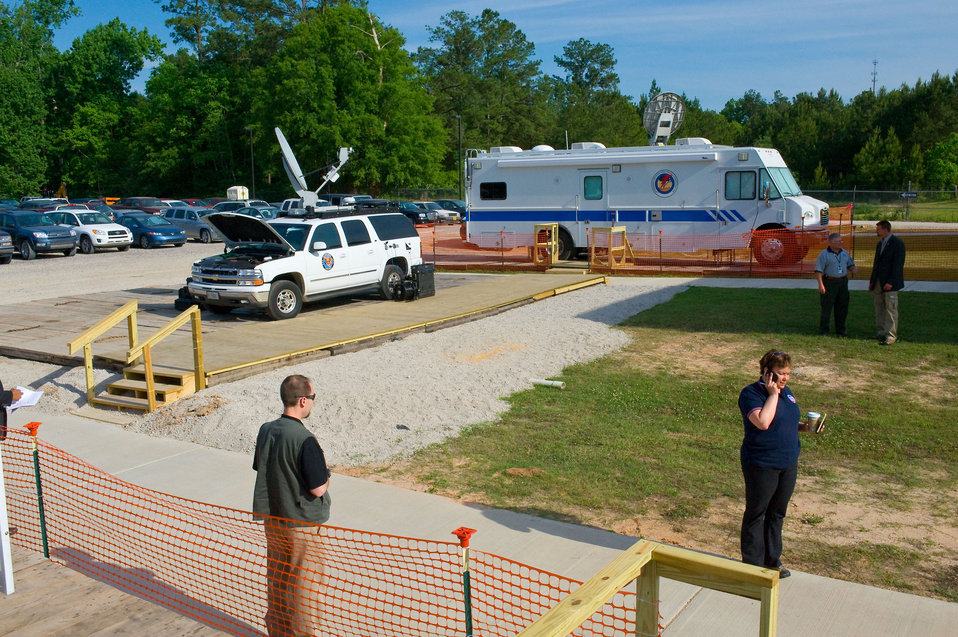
EPA Administrator Meets with Gulf Region Scientists

May 10, 2010 - EPA Administrator Lisa P. Jackson at Agency’s Region 6 Mobile Command Center.